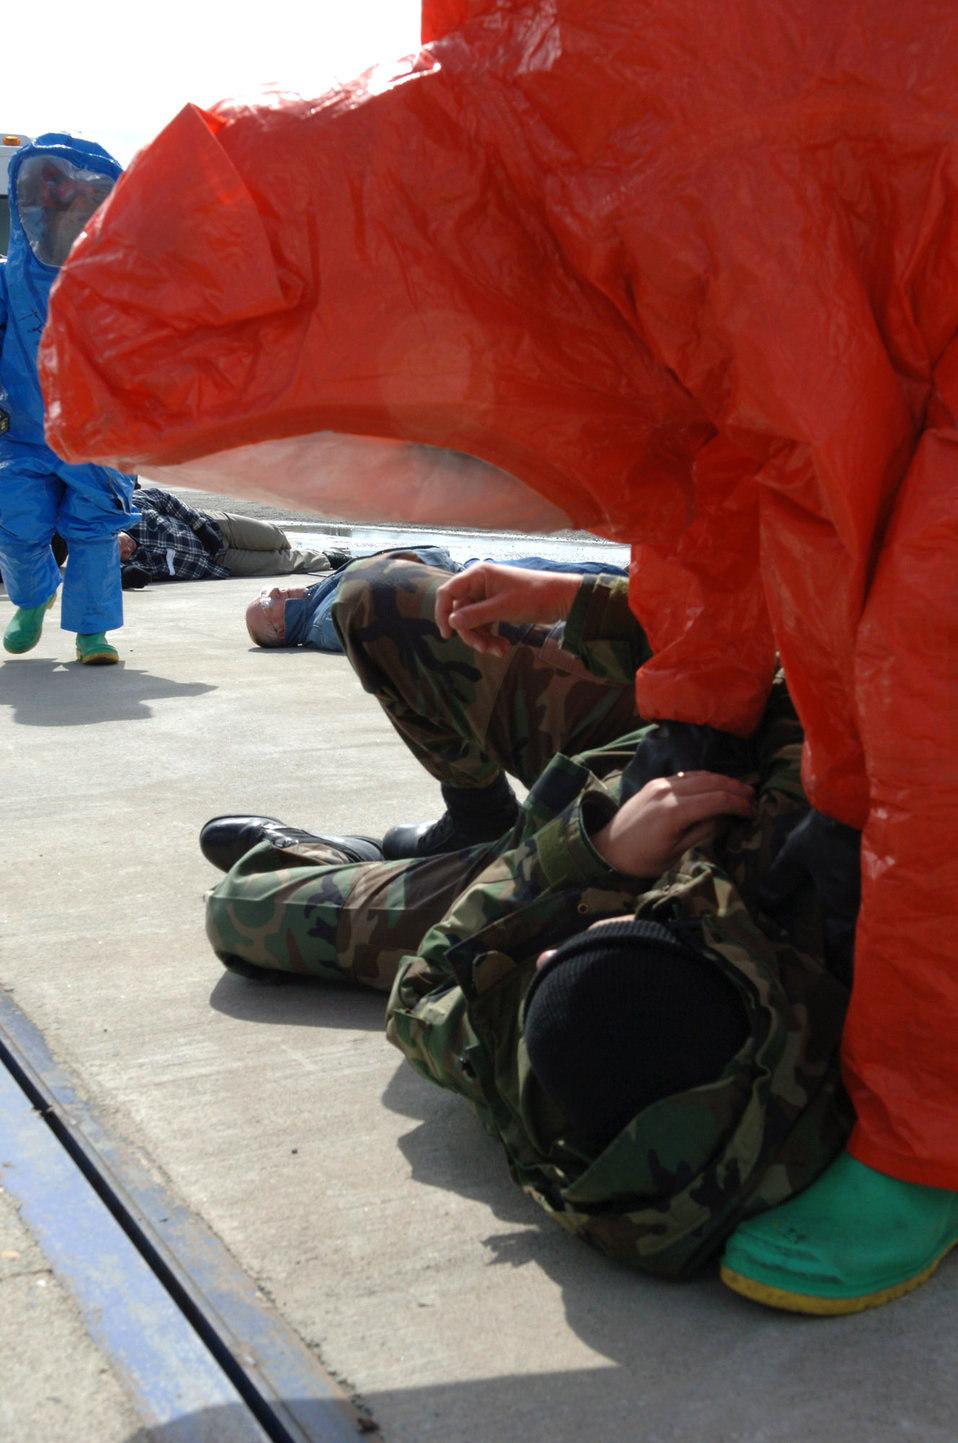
Fairchild puts readiness to the test

Senior Airman Kristopher Doughty checks on a simulated injured Airman April 19 during an exercise at Fairchild Air Force Base, Wash. The intent of the exercise is to test base personnel's abilities to respond to a weapon of mass destruction. Airman Doughty is assigned to the 92nd Civil Engineer Squadron.